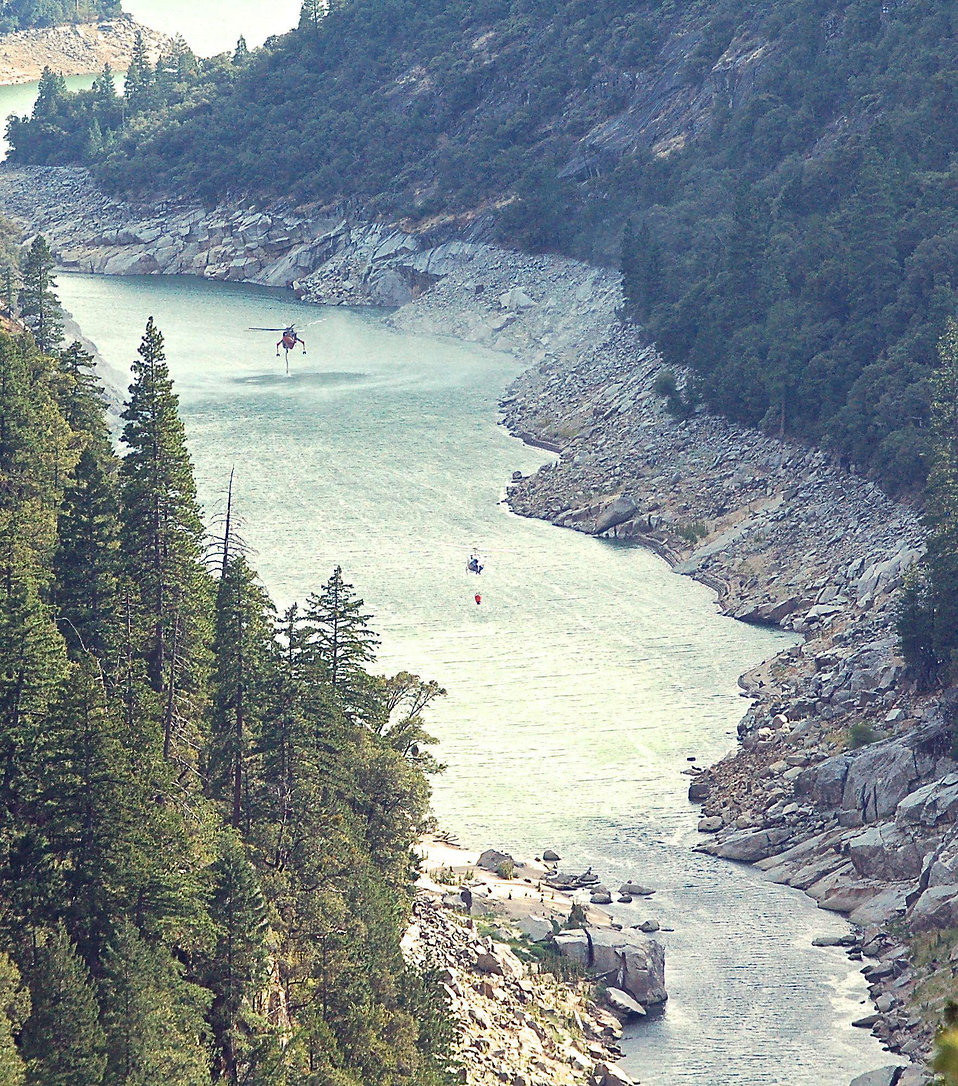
Heavy and medium helicopters refill at the Beardsley Reservoir near the Power Fire in California. The Power Fire in the Stanislaus National Forest near Beardsley Reservoir in California began on Aug. 5, 2013 is under investigation. The fire has consumed 881 acres and is 32% contained.